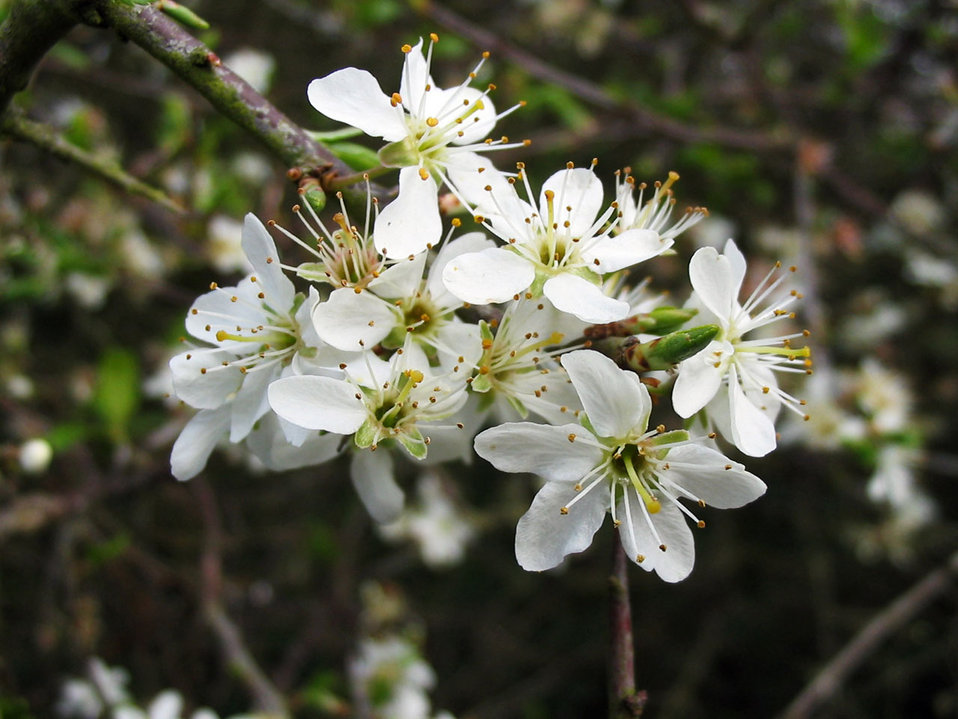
Tree in blossom in spring.